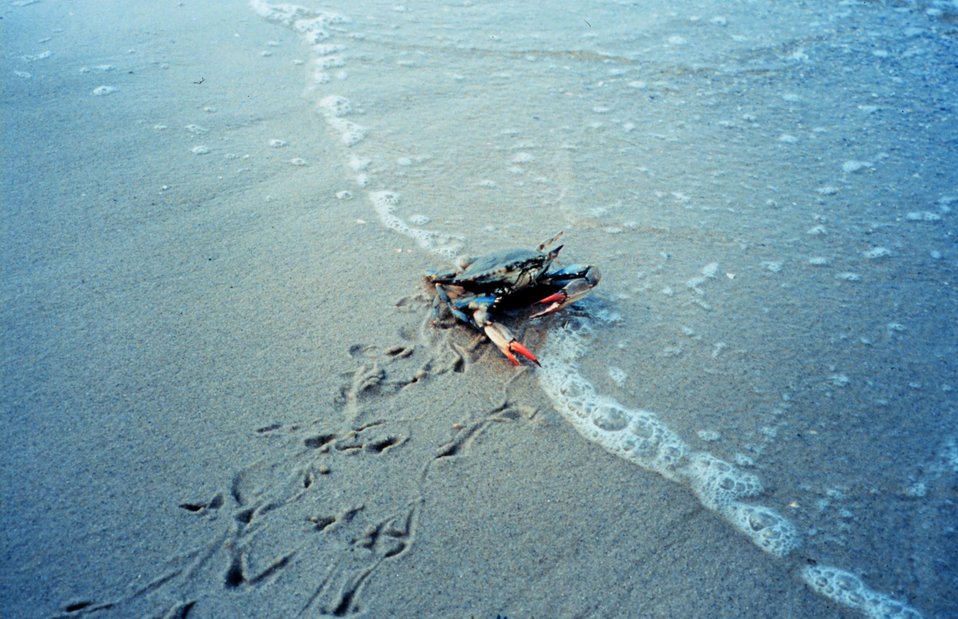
Female blue crab (Callinectes sapidus) on beach. Females can be distinguished by the right red tips on their claws. Note impressions in sand made by crab when ambulating.